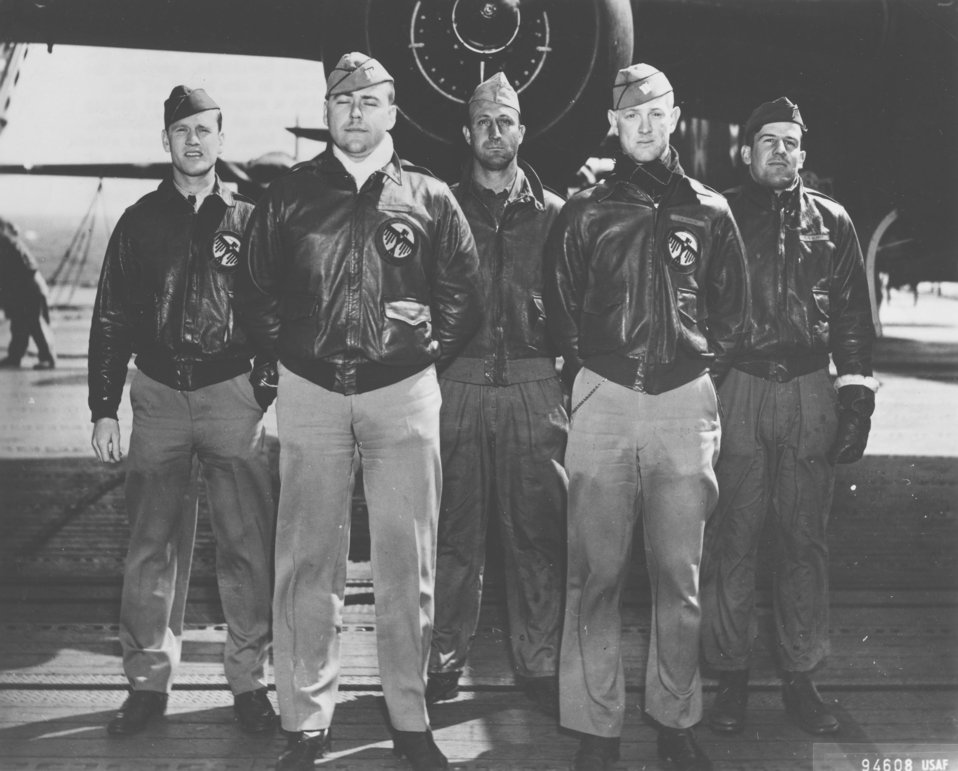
Doolittle Tokyo Raiders, Crew No. 9

Crew No. 9 (Plane #40-2203, target Tokyo): 34th Bombardment Squadron, front row: Lt. Harold F. Watson, pilot; and Lt. James N. Parker Jr., copilot; back row: Lt. Thomas C. Griffin, navigator; Sgt. Wayne M. Bissell, bombardier; and Tech. Sgt. Eldred V. Scott, flight engineer/gunner.